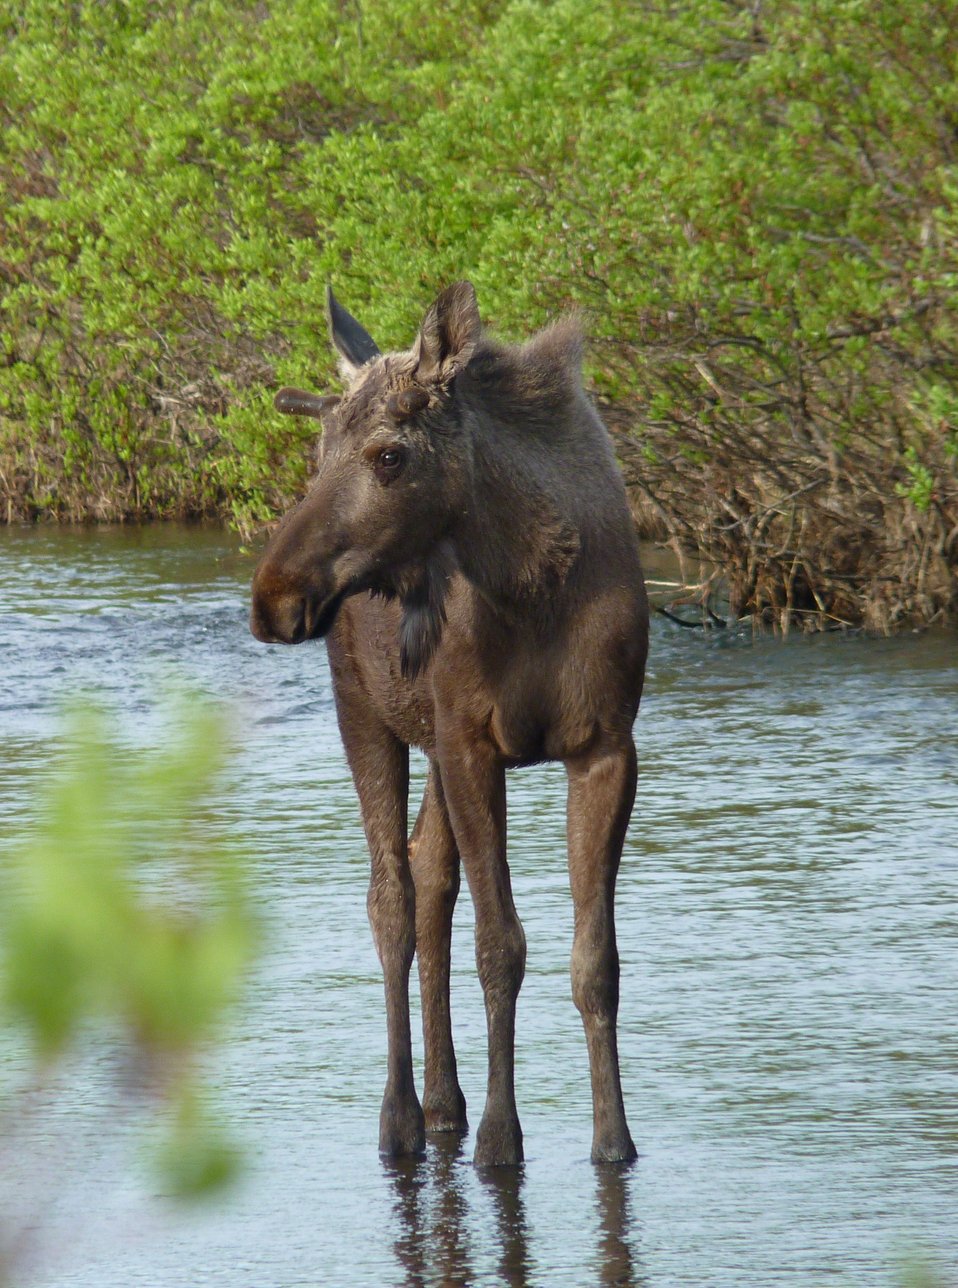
Moose in Allen Creek

Andreafsky Wilderness, Yukon Delta National Wildlife Refuge